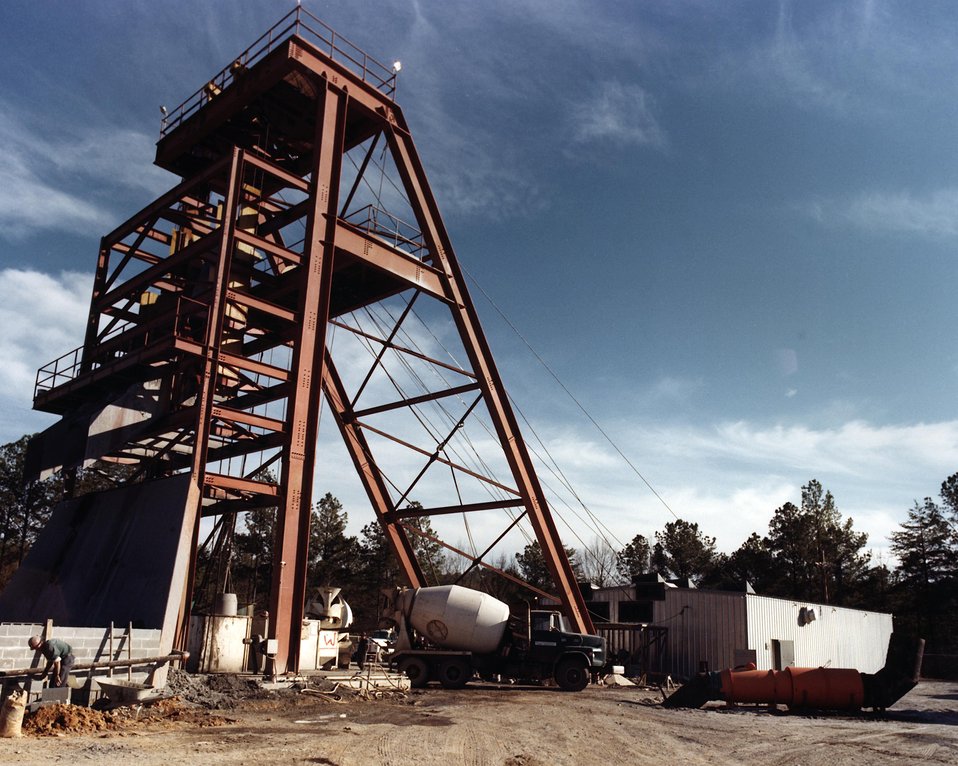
HEAD FRAME AT THE DEPARTMENT OF ENERGY'S SHAFT BORER PROJECT NEAR OAK GROVE ALABAMA.

THE BORER MACHINE IS CONSTRUCTING THE 1160 FT INTAKE SHAFT AT U. S. STEEL OAK GROVE #4 MINE.